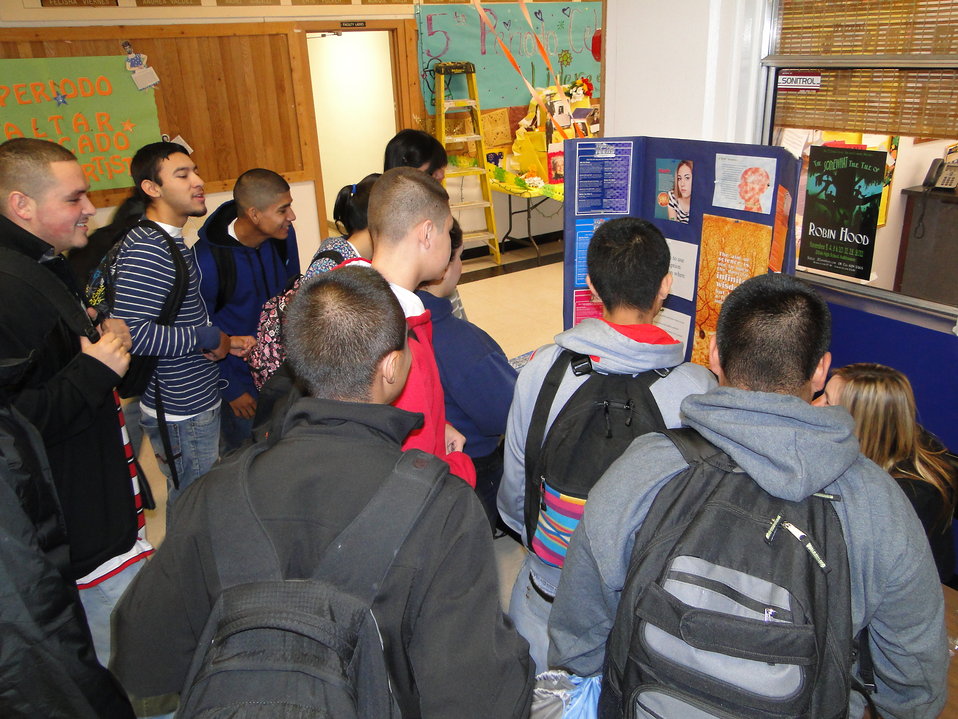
Wapato High school participated in NDFW by having a question of the day contest using questions from the National Drug IQ Challenge. Groups were determined by lunch hour and the groups competed to see who would answer the most questions correctly. Each day there was a new question and a drug fact of the day with boards, brochures, and Q&A sessions.